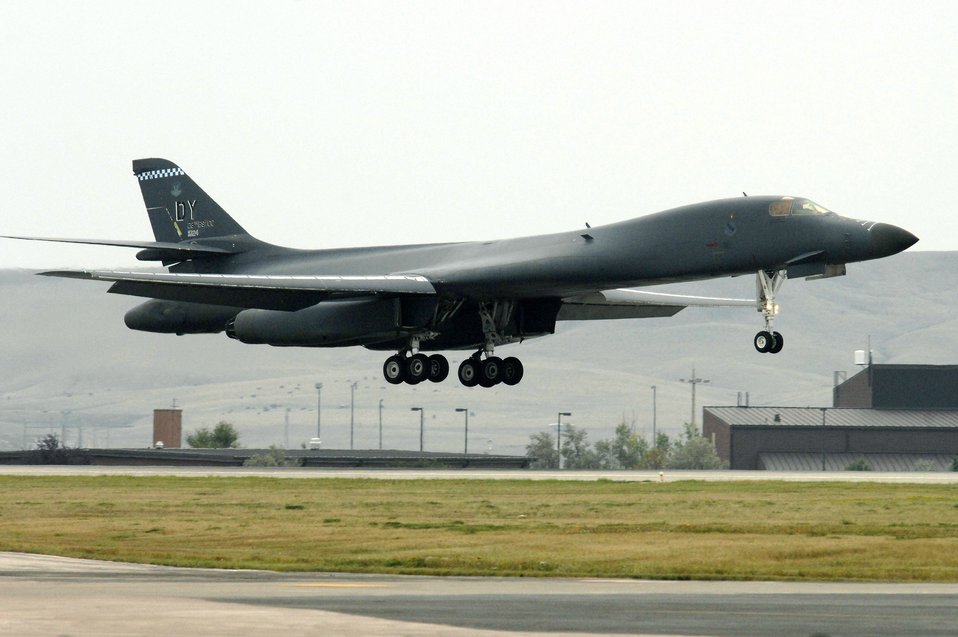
Dyess Airmen, aircraft arrive at Ellsworth

A B-1B Lancer from Dyess Air Force Base, Texas, lands at Ellsworth AFB, S.D., Sept. 17. Ellsworth AFB will temporarily house 550 Airmen and 20 B-1B aircraft while 6,600 feet of runway is rapaired at Dyess AFB.